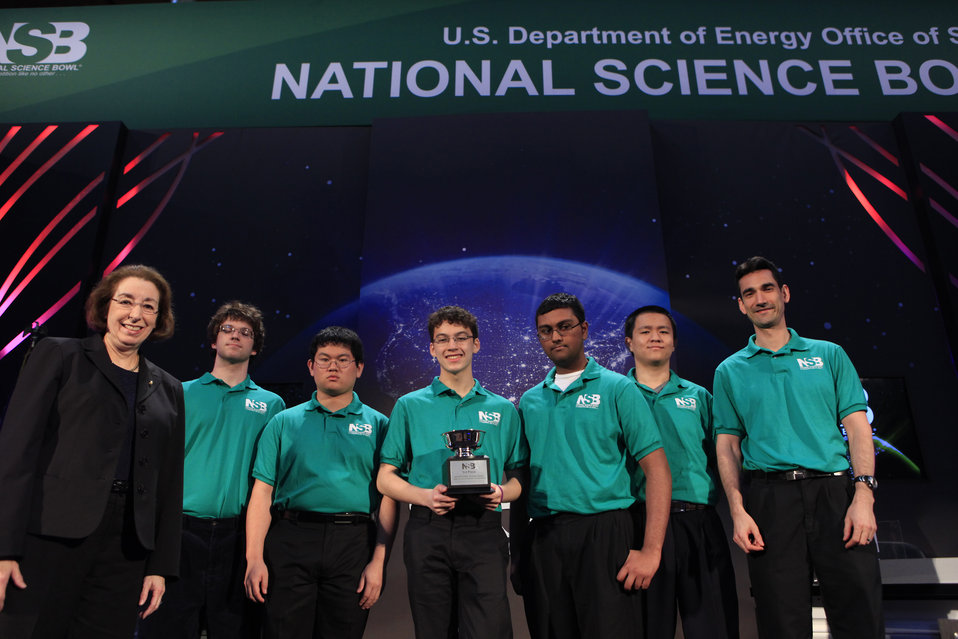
Students from Lexington High School in Lexington, MA won third place in the 2013 National Science Bowl in Washington, DC.

The Department of Energy created the National Science Bowl in 1991 to encourage students to excel in mathematics and science and to pursue careers in these fields.